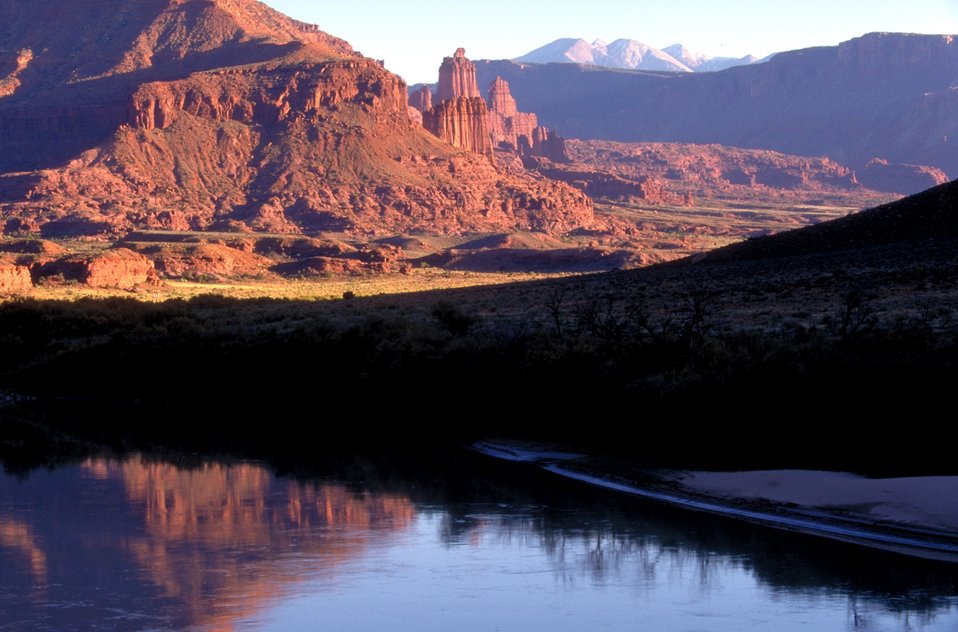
Fisher Towers along Highway 128, near Moab, Utah.